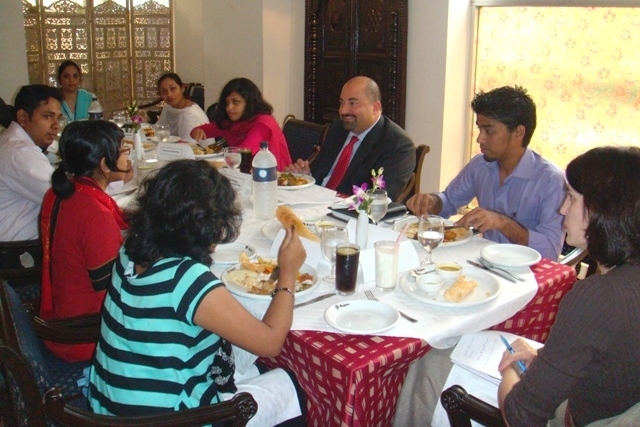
ADAS Keshap Enjoys Lunch With Bangladeshi Youth Community Leaders

U.S. Acting Deputy Secretary of State for South and Central Asian Affairs Atul Keshap enjoys lunch with Bangladeshi youth community leaders in Dhaka, Bangladesh, on July 26, 2010.